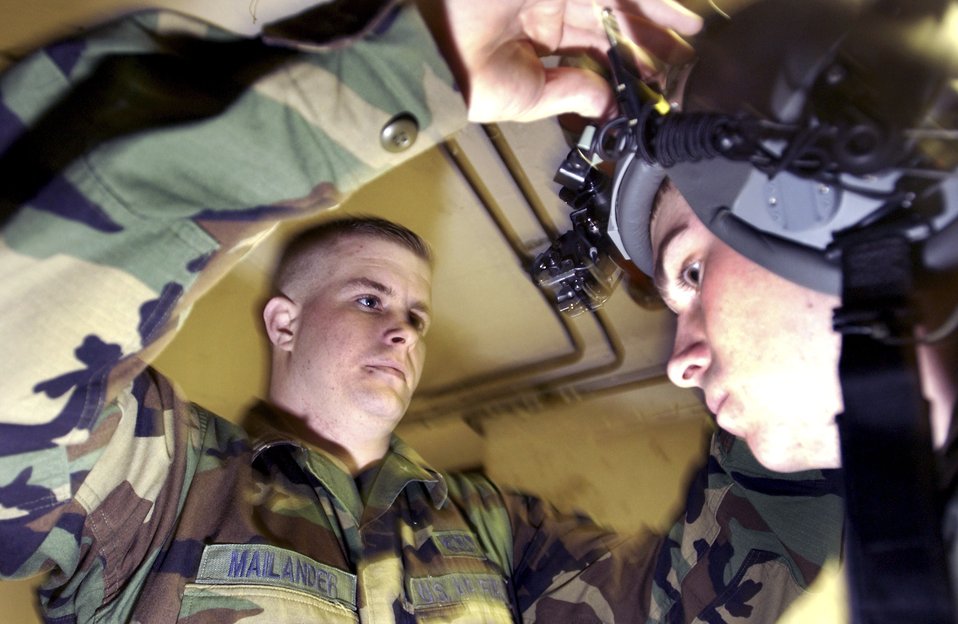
Testing out night vision

RHEIN-MAIN AIR BASE, Germany -- Senior Airman Luke Mailander fits Airman 1st Class Dan Carbon with night-vision goggles during his preflight equipment check. Airman Carbon is a C-17 Globemaster III loadmaster with the 817th Expeditionary Airlift Squadron and deployed from Charleston AFB, S.C. Airman Mailander is an aircrew lift support technician with the 817th EAS and deployed from Travis Air Force Base, Calif.